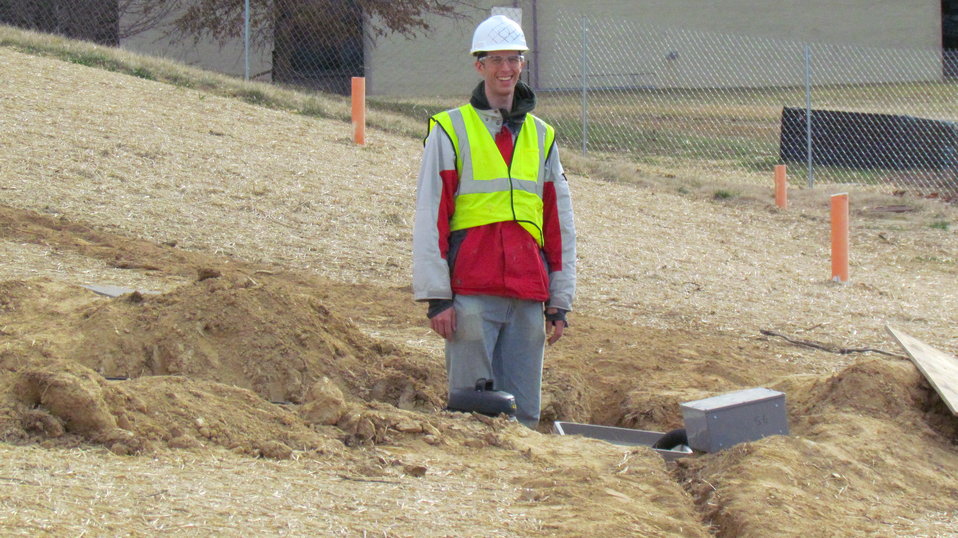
Picture of Harrison Skye of EL’s Building Energy and Environment Division installing temperature sensors to monitor performance of earth-couple loops.